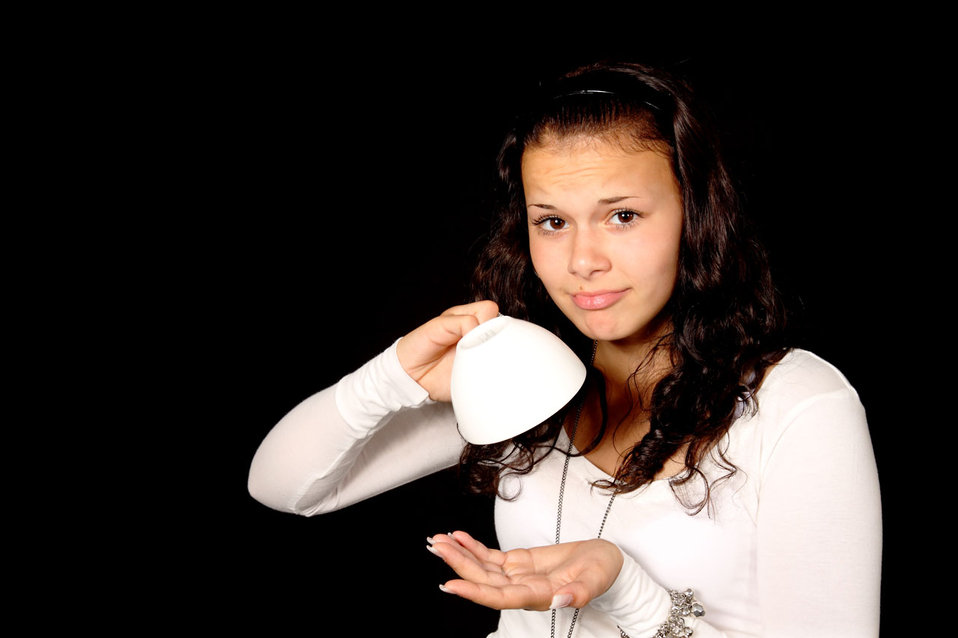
Any more coffee?.